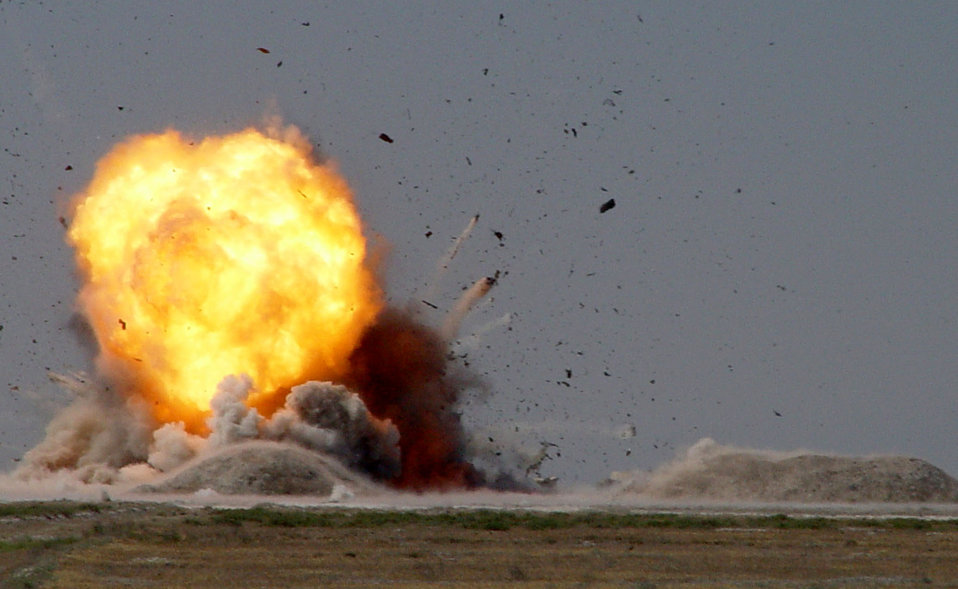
Bombs and one missile

INCIRLIK AIR BASE, Turkey (AFPN) -- Explosive ordnance disposal technicians from here dispose of two general-purpose bombs and one missile warhead during joint training with Turkish air force EOD units in Konya, Turkey.